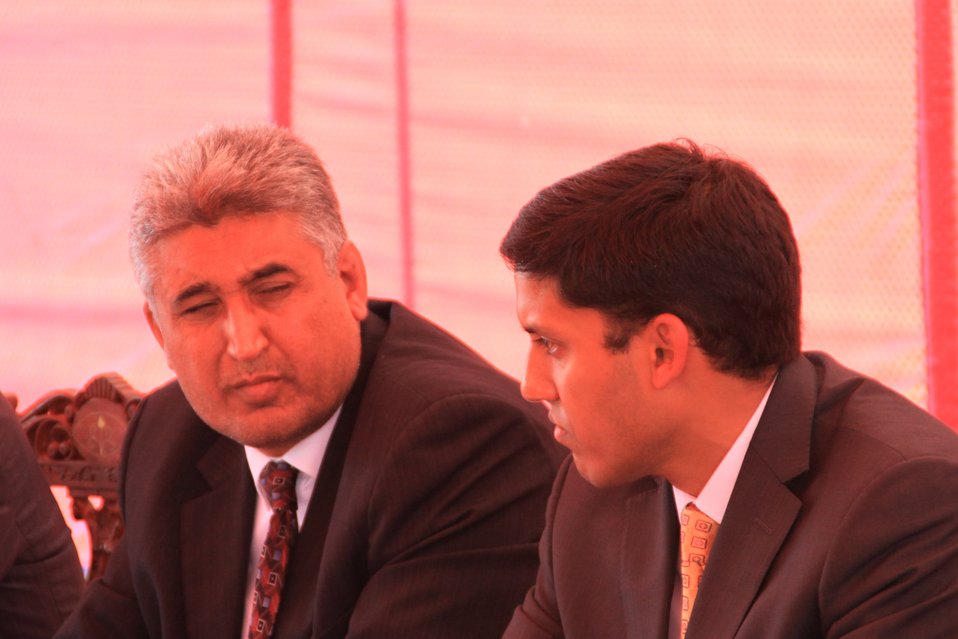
Badam Bagh Farm